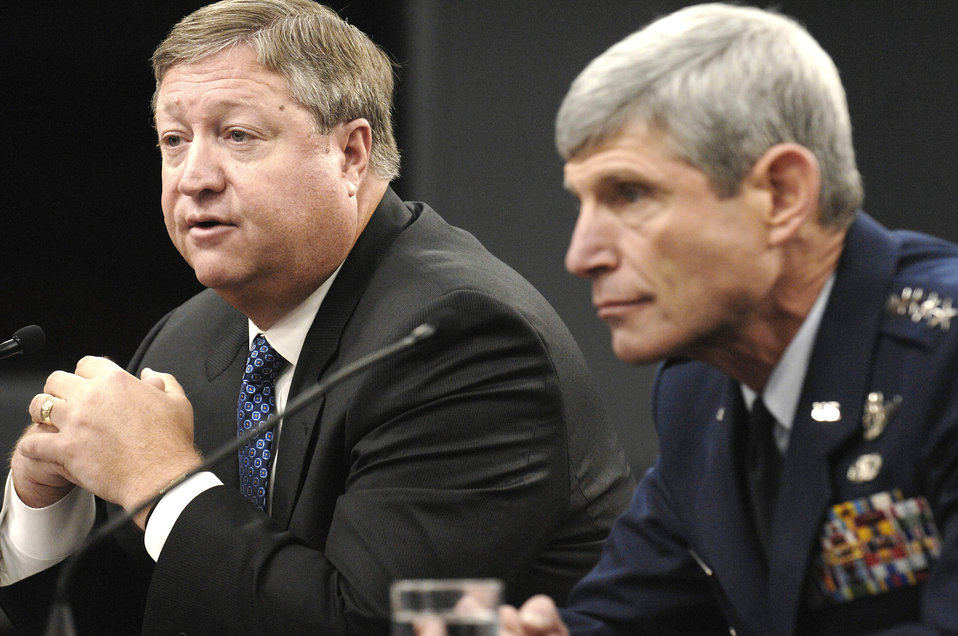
Air Force officials stand up Global Strike Command

Air Force Secretary Michael B. Donley (left) and Air Force Chief of Staff Gen. Norton Schwartz answer questions at an Aug. 5 Pentagon news conference on the Air Force Global Strike Command activation. The new command, with headquarters at Barksdale Air Force Base, La., stands up Aug. 7.